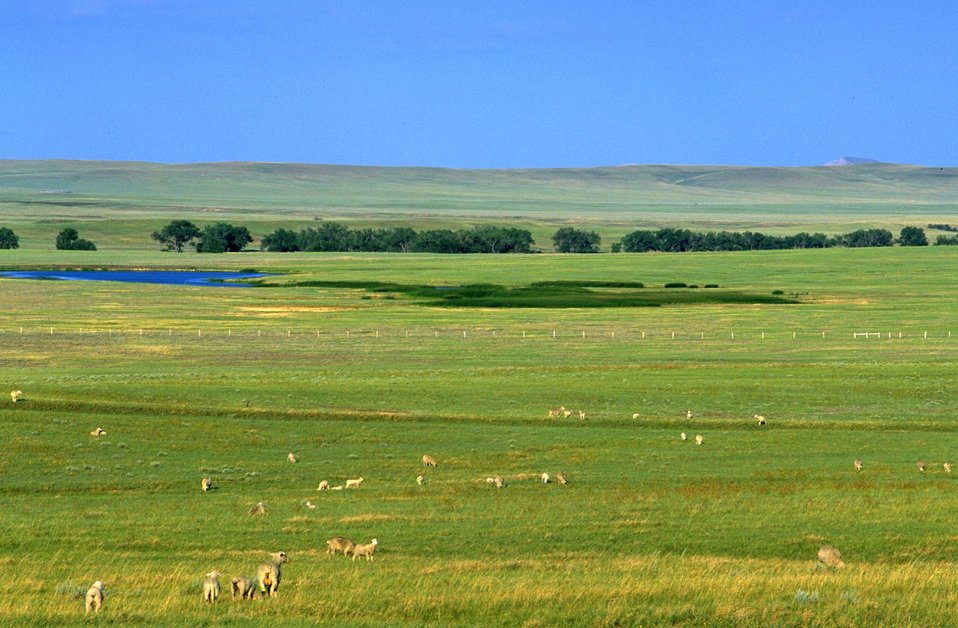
Pinch Reservoir and Moreau River